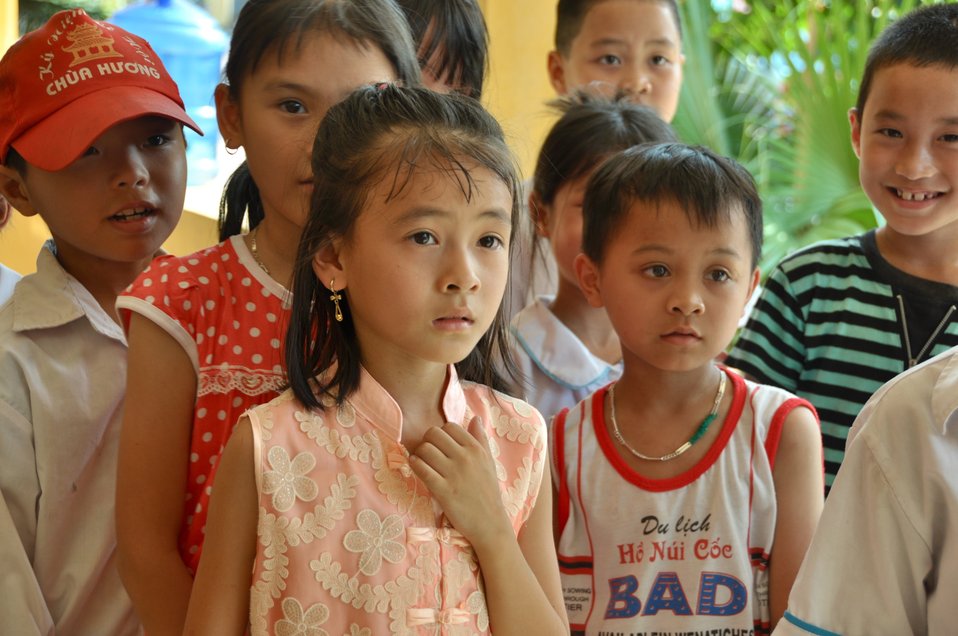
USAID supports deworming education and medication distribution in Bac Giang Province

May 20, 2013